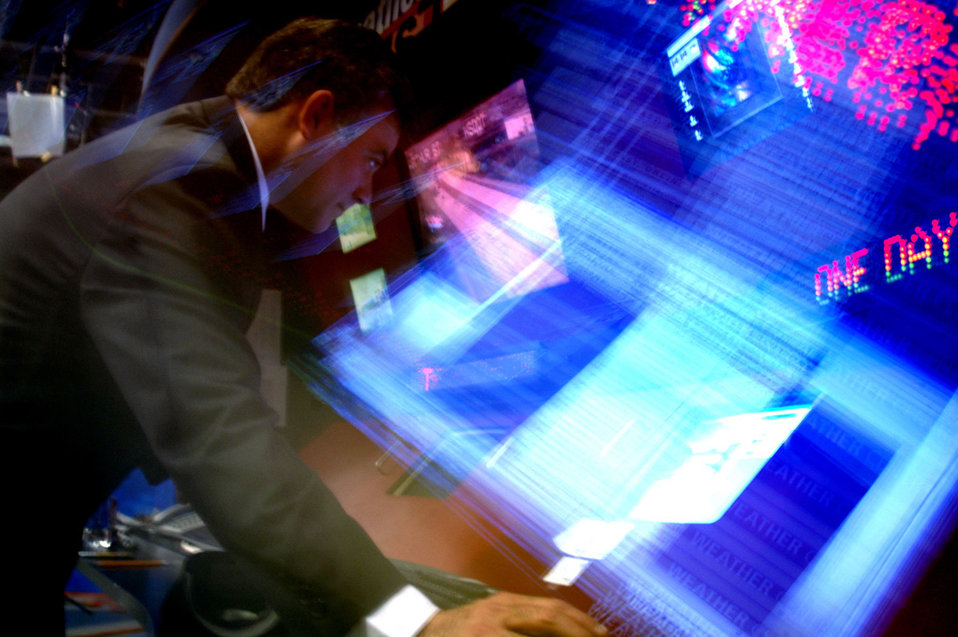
Washington weatherman

FAIRCHILD AIR FORCE BASE, Wash. -- Retired Master Sgt. Dave Law, broadcast weatherman, KHQ6, Spokane, Wash., uses leading edge technologies to bring weather forecasts into the homes of Americans Jan. 6. During his 23 years of service he forecasted the weather for pilots.